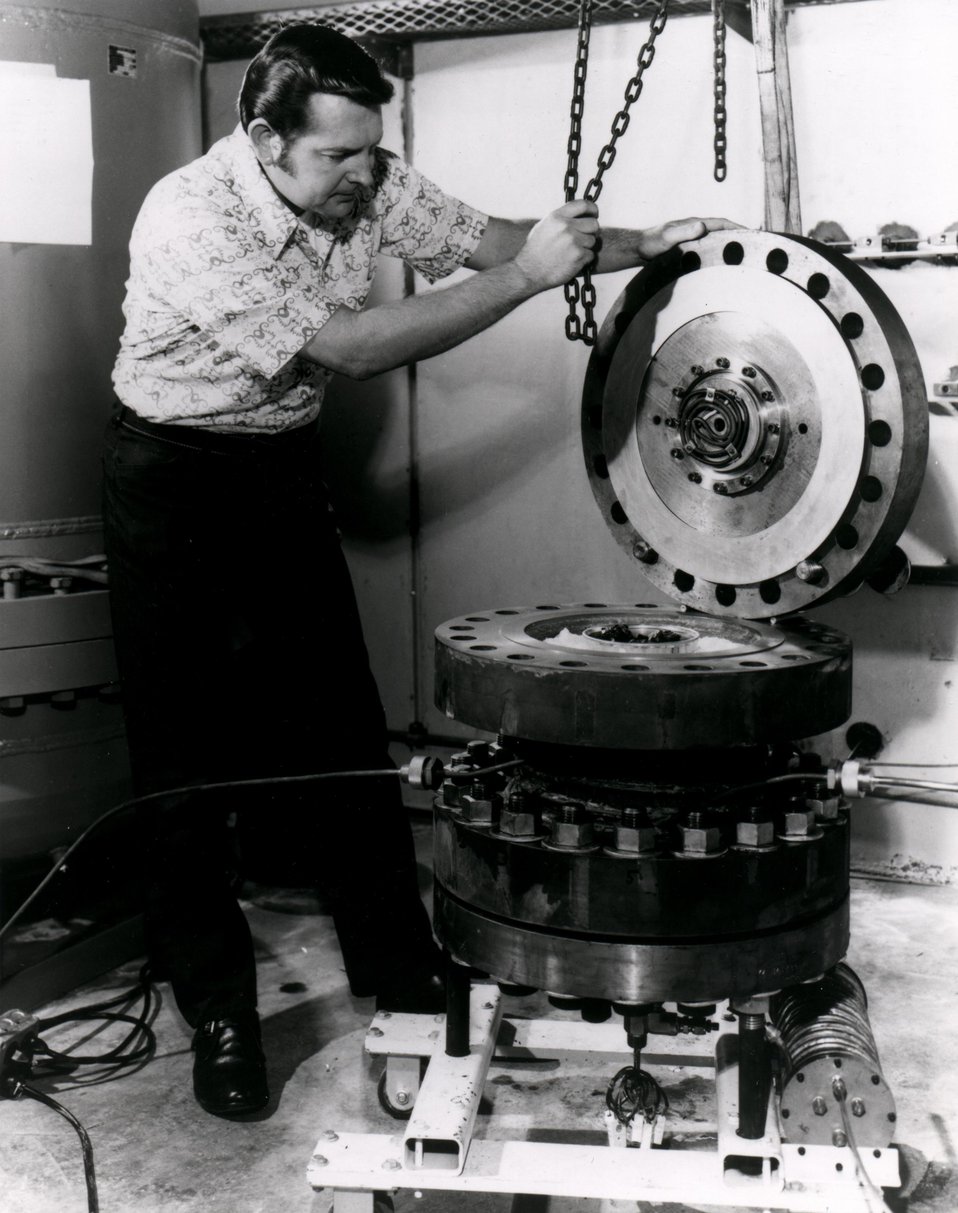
Scientists at the Department of Energy's (DOE) Lawrence Livermore Laboratory in California are using this pressure chamber to explore a new technology to gasify coal deep underground without mining. The device in this photograph simulates this kind of underground retort. Circa 1975.